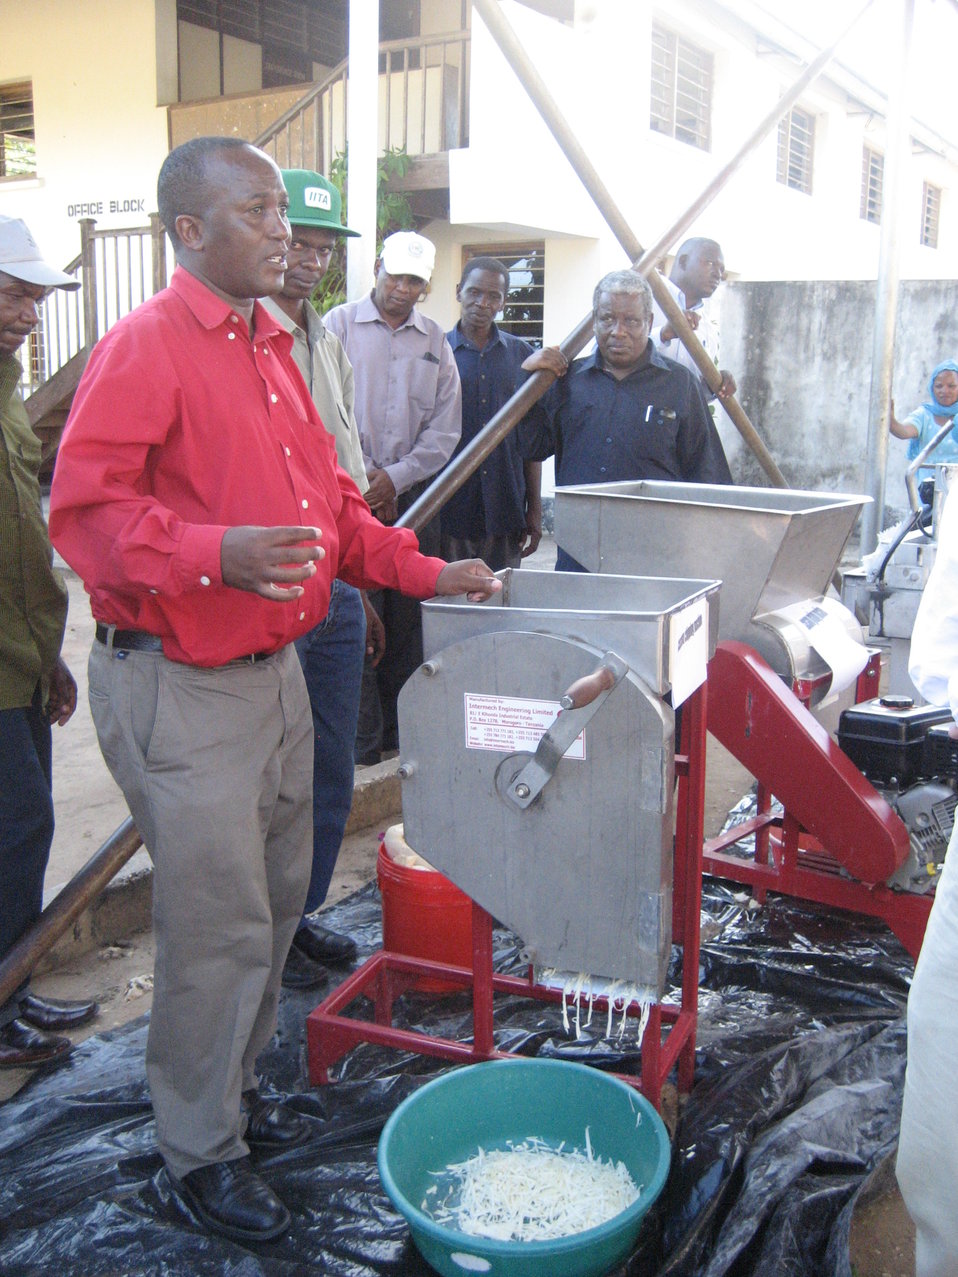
Deputy Secretary Neal Wolin’s trip to Africa 2009

A demonstration on cassava processing…. .